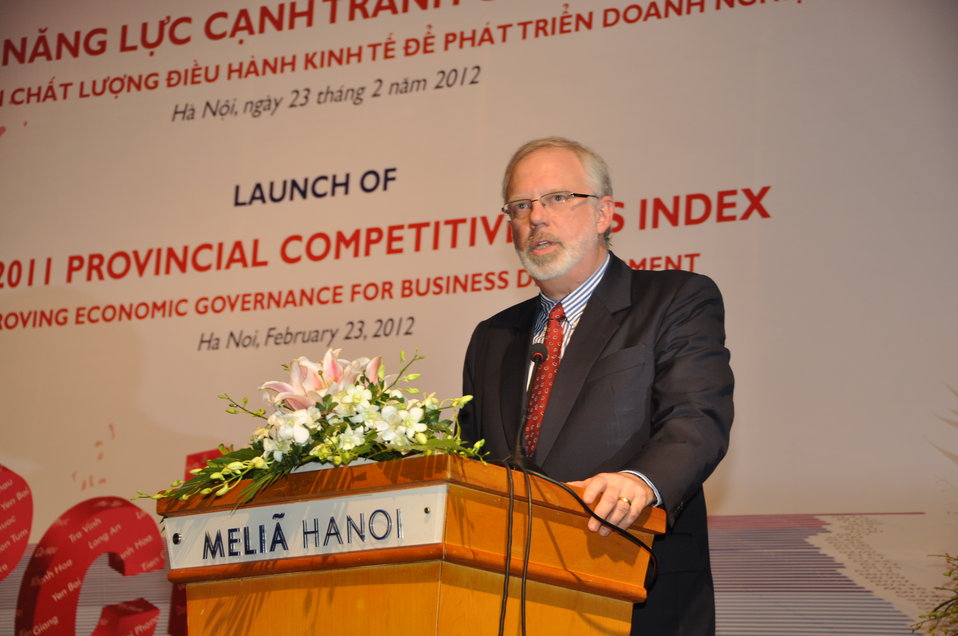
U.S. Ambassador David B. Shear at the Provincial Competitiveness Index 2011 Launch